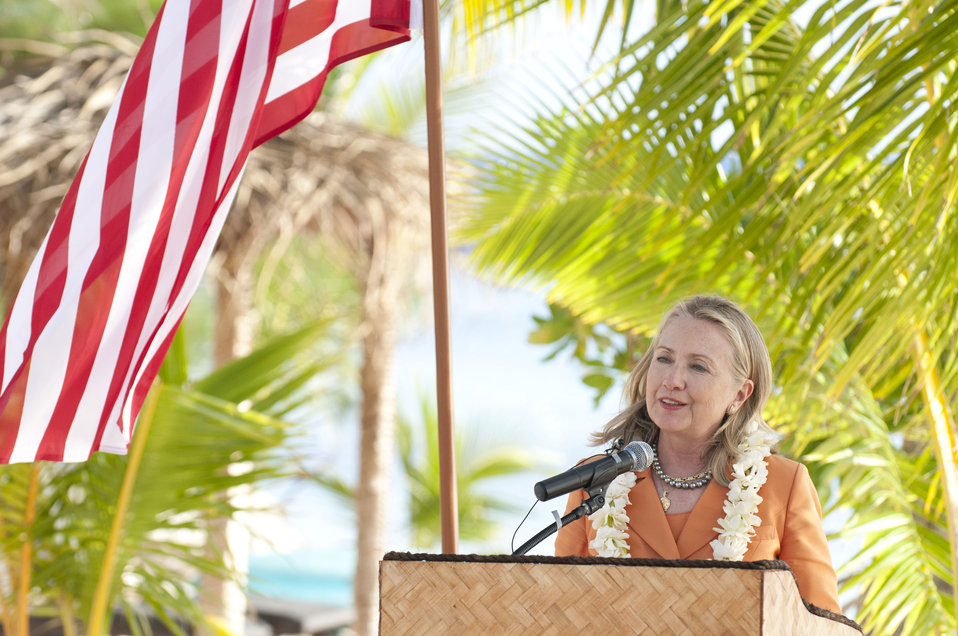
Sustainable Development and Conservation Event in the Cook Islands

U.S. Secretary of State Hillary Rodham Clinton delivers remarks at Sustainable Development and Conservation event in Rarotonga, Cook Islands, August 31, 2012.